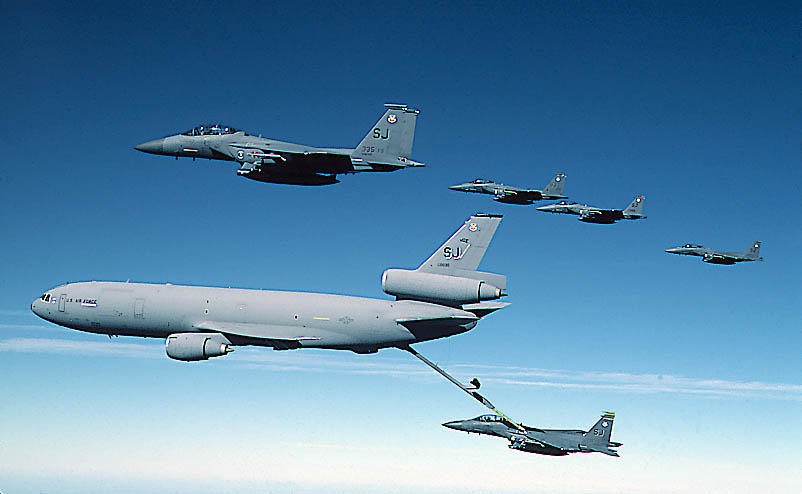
Fueling the flight

FILE PHOTO -- A KC-10A Stratotanker refuels a flight of F-15 Eagles. Although the KC-10A's primary mission is aerial refueling, it can combine the tasks of tanker and cargo aircraft by refueling fighters while carrying the fighters' support people and equipment during overseas deployments. The KC-10A can transport up to 75 people and about 170,000 pounds of cargo a distance of about 4,400 miles. Without cargo, the KC-10A's unrefueled range is more than 11,500 miles.